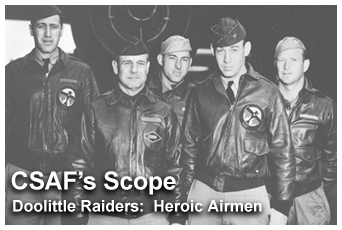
CSAF's Scope highlights Doolittle Raiders heroism, impact

The CSAF's Scope focuses on current topics the Air Force chief of staff feels are of special importance to today's Airmen. Among Gen. T. Michael Moseley's top issues this month is the 65th anniversary of the Doolittle Raiders' bombing mission over Japan.